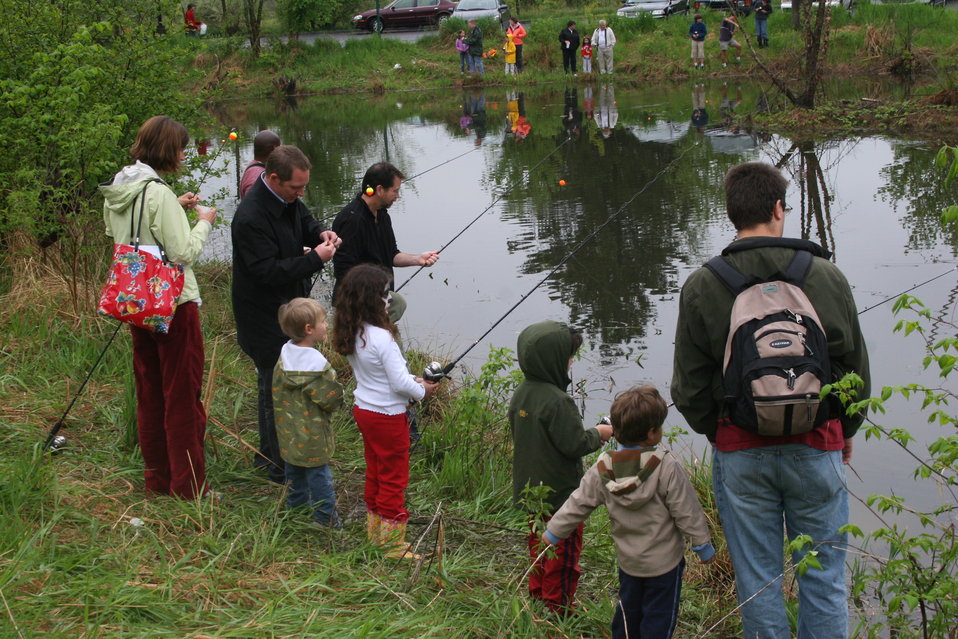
Fishing event at U.S. Fish and Wildlife Service Regional Office in Hadley, MA